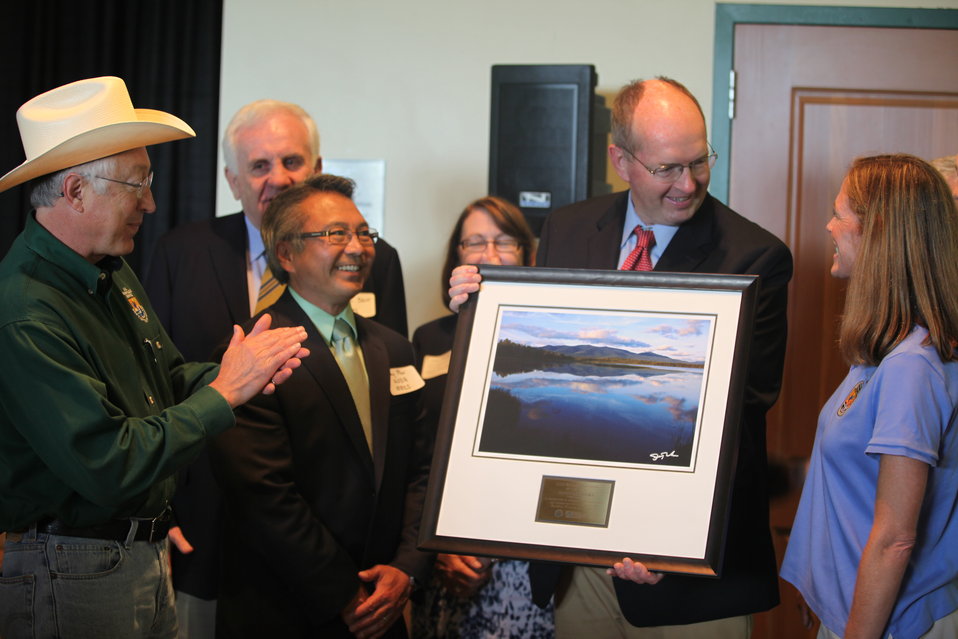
Refuge Volunteer of the Year2

Secretary of the Interior Ken Salazar presents the 2012 National Wildlife Refuge Volunteer of the Year Award to David Govatski, a volunteer at the Silvio O. Conte National Fish & Wildlife Refuge.